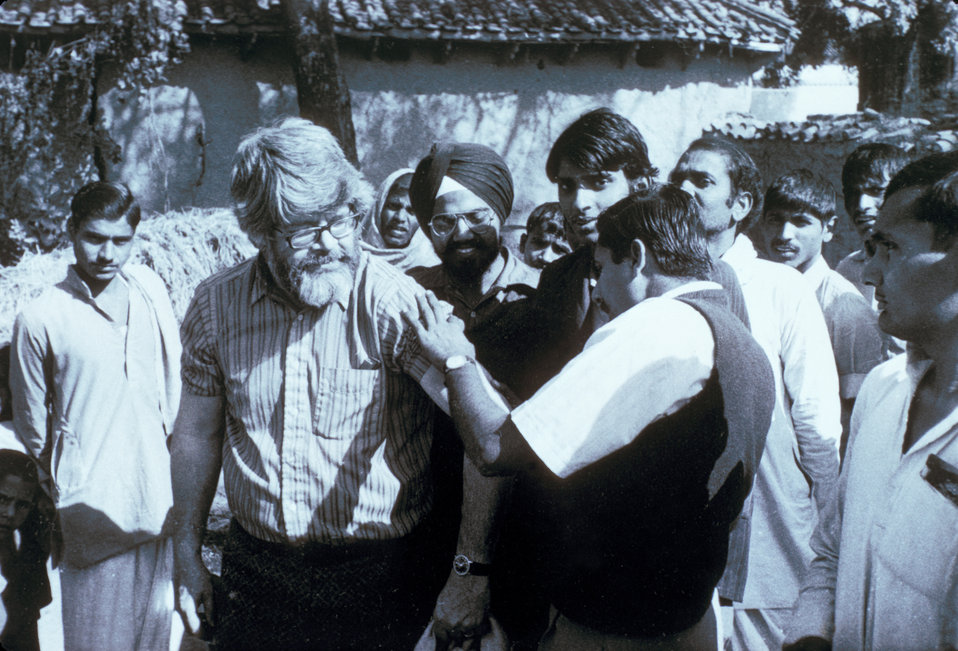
Here we see Dr. A. Khan examining the successful smallpox vaccination scar of Dr. J. D. Millar.